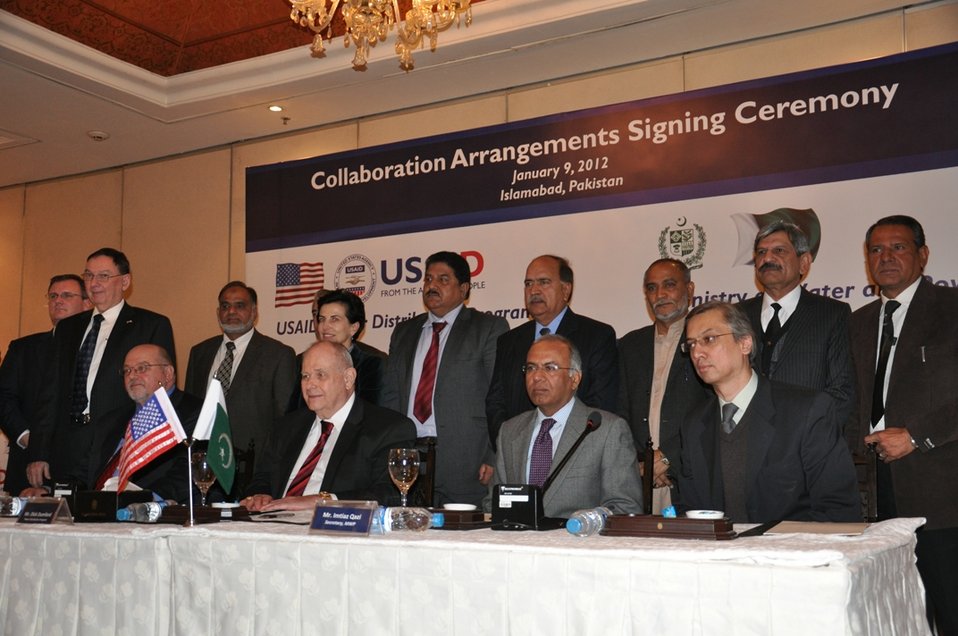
John Morgan, and representatives of USAID, with Chief Executive Officers of Pakistan's power distribution companies

Under the signed collaboration agreements, a USAID $60 million Power Distribution Program will train thousands of DISCO specialists to improve the maintenance of the distribution lines, collection of bills, customer services, management, and other aspects of DISCO operations. USAID will also help DISCOs modernize equipment, provide expert consultations, and support the introduction of various international best practices to ensure a more reliable supply of power to consumers. This assistance is yet another example of the long-term U.S. commitment to support Pakistan’s key priorities.